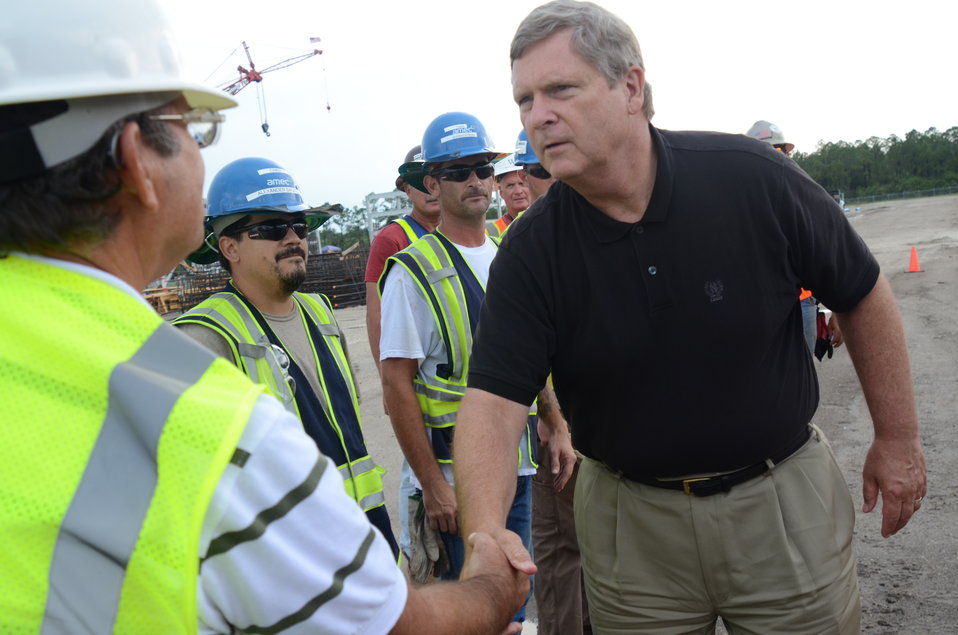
Agriculture Secretary Tom Vilsack shakes hands with construction personnel at the waste-to-energy INEOS bioprocessing facility in Florida, on Thursday, Aug. 11, 2011. The INEOS New Planed BioEnergy facility in Vero Beach, Florida, was granted a conditional Agriculture loan guarantee earlier this year to help build and operate a biorefinery capable of producing 8 million gallons per year of cellulosic ethanol and 6 megawatts of electricity.